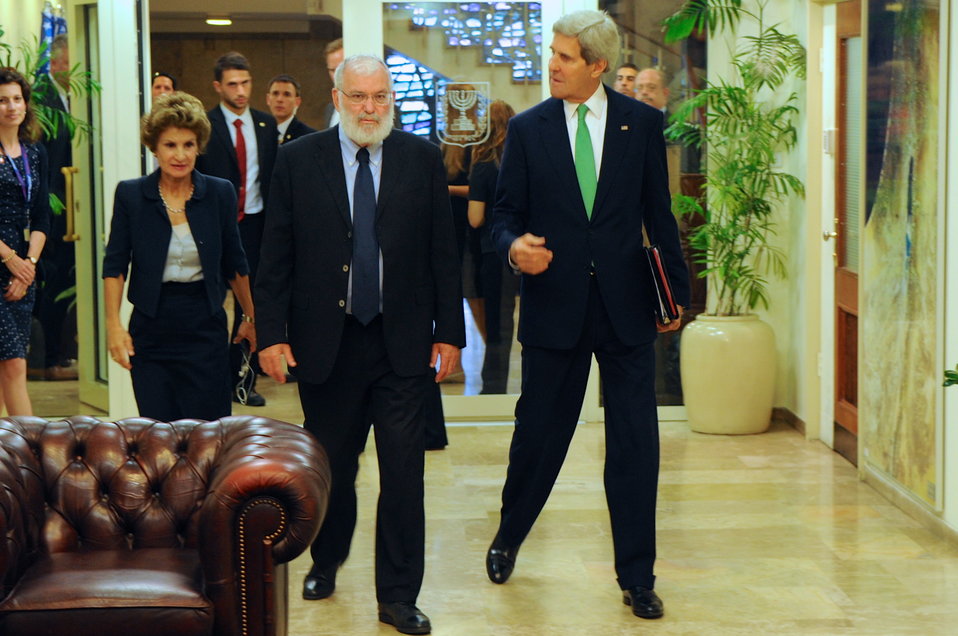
Secretary Kerry Arrives for Meeting With Prime Minister Netanyahu

U.S Secretary of State John Kerry, accompanied by Israeli National Security Advisor Yaakov Amirdror, arrives for a meeting with Prime Minister Benjamin Netanyahu in Jerusalem on September 15, 2013.